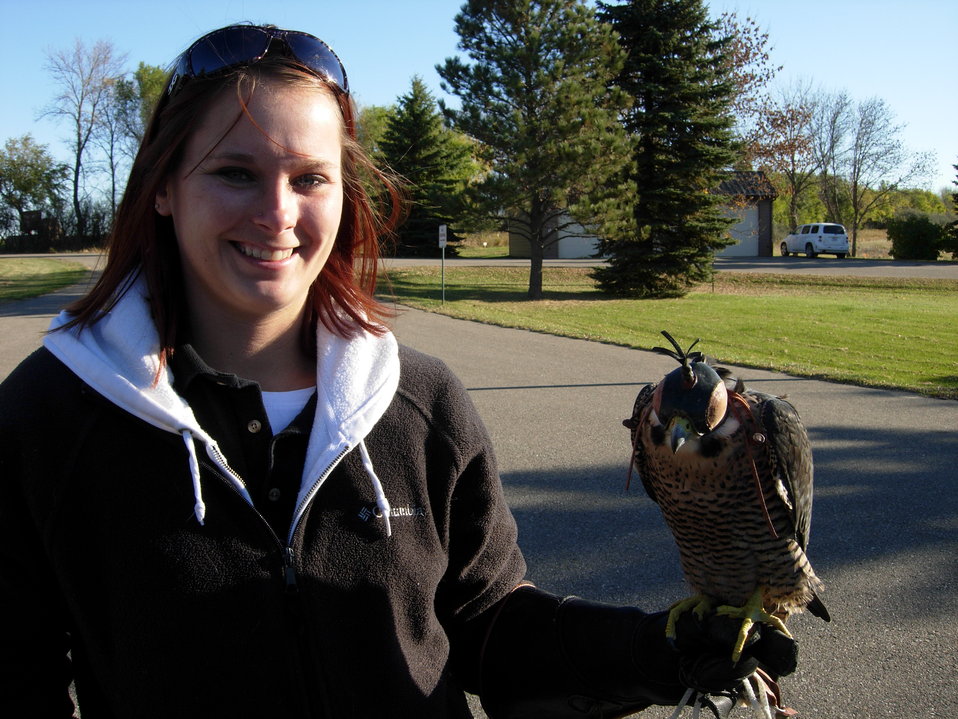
Lynsi and Rosie

Lynsi Schneider from the Roosevelt Park Zoo in Minot, ND with 'Rosie' the peregrine falcon.